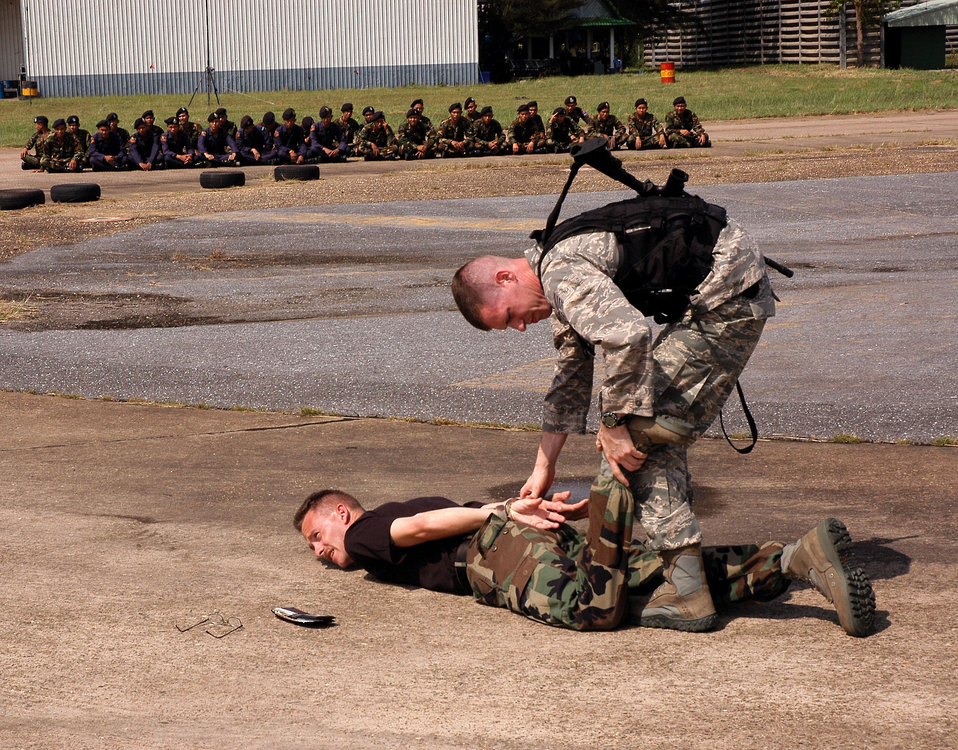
Thais, Americans join forces for Operation Teak Torch training

Staff Sgt. Richard Holder cuffs Tech. Sgt. Gregory Stout during exchange training with ground defense forces from Udon Thani, Thailand. Sergeant Holder is assigned to the 18th Security Forces Squadron at Kadena Air Base, Japan. Sergeant Stout is assigned to the 353rd Special Operations Group security forces at Kadena AB.